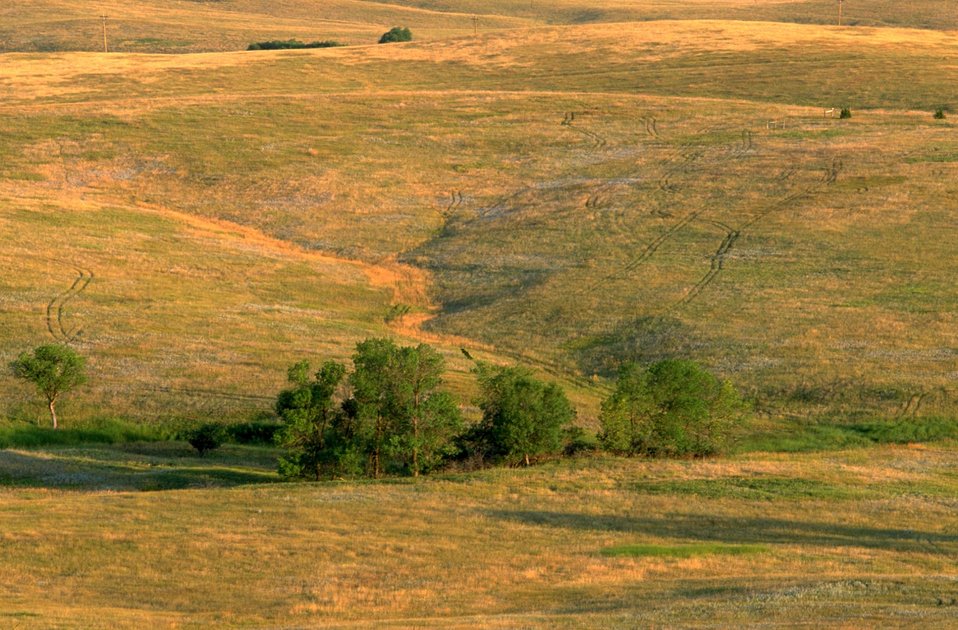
Spring Creek Riparian at the north end of Fort Mead